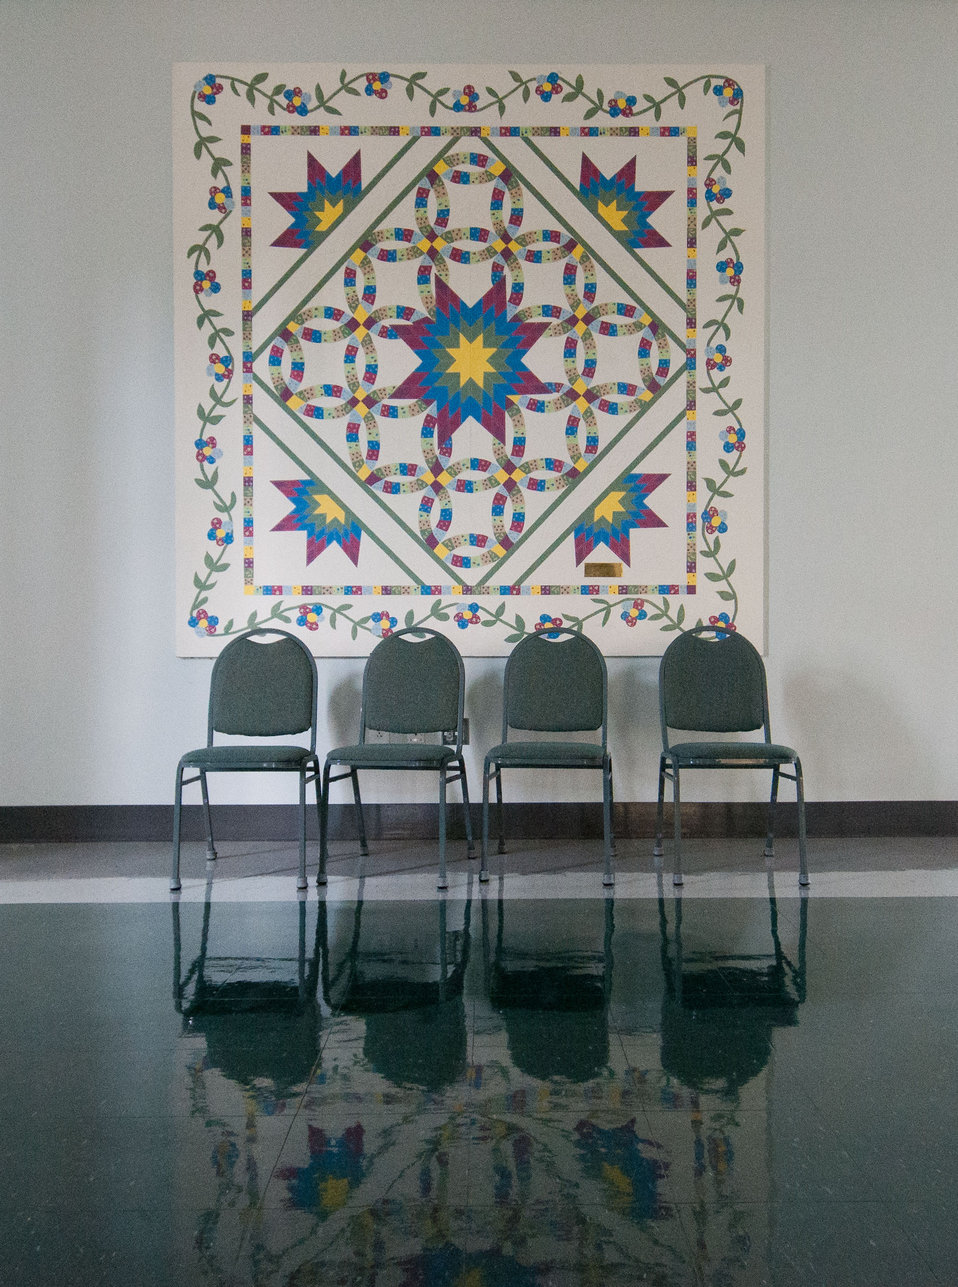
Multi-purpose room in the Education Center of the Bath County Agricultural Education and Marketing Center, Owingsville, KY, on Friday, July 15, 2011. The Center was the recipient of a $400,000 Rural Business Enterprise Grant. It has given farmers and producers from Bath and surrounding counties the opportunity to manufacture and market their locally grown and locally produced value-added and “Kentucky Proud” branded products, including but not limited to, fresh produce, artisan crafts and specialty food products. The Center is open year-round and allow residents to sell products in four different retail categories, including Kentucky products, regional crafts, “green” groceries and bakery/deli. Several producers expressed their gratitude for Rural Development’s assistance in making the center a reality. The project was made possible through American Recovery and Reinvestment Act of 2009 funding enacted by the 111th United States Congress in February 2009 and signed into law on February 17, 2009, by President Barack Obama.